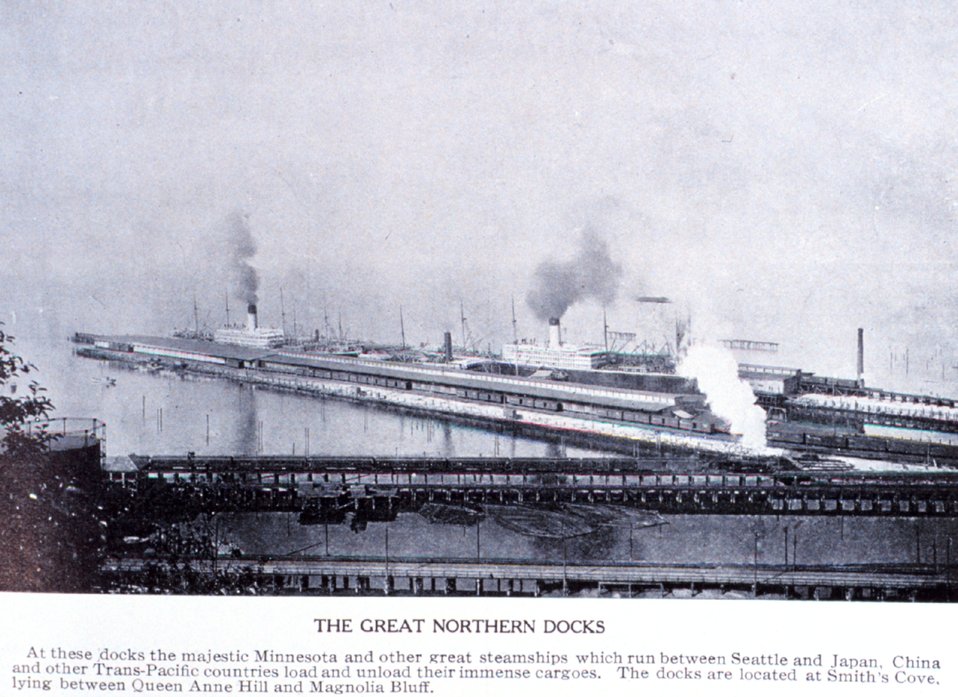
'The Great Northern Docks' at Smith's Cove. In: 'Puget Sound and Western Washington Cities-Towns Scenery', by Robert A. Reid, Robert A. Reid Publisher, Seattle, 1912. P. 69.